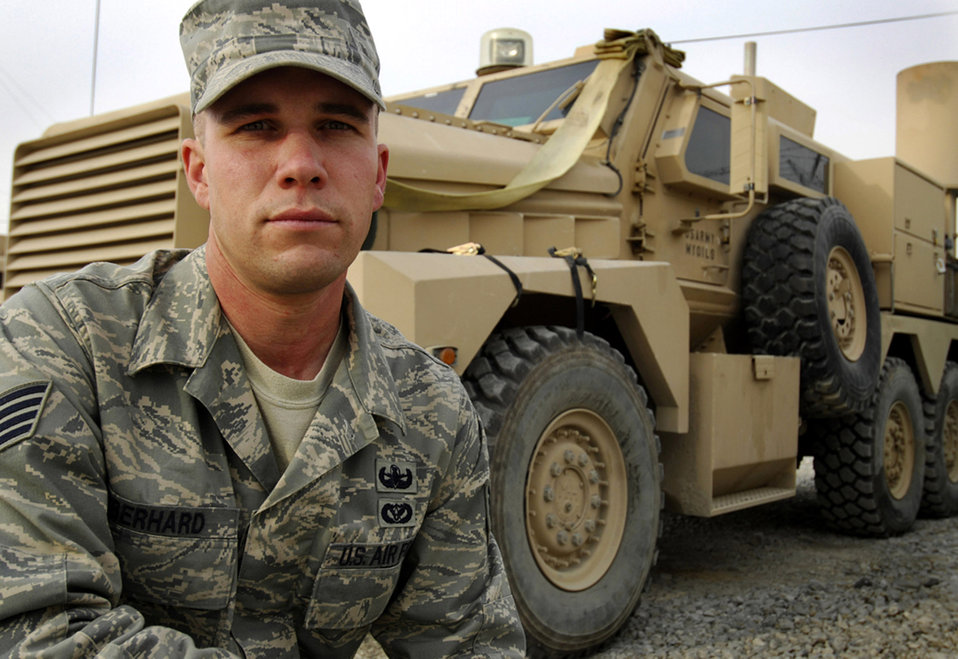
A life saved ... unexpectedly

Staff Sgt. Eric Eberhard kneels in front of a joint explosive ordnance disposal rapid response vehicle Dec. 17 at Forward Operating Base Gardez, Afghanistan. Sergeant Eberhard's quick reactions allowed him to save the life of the leader of his three-person EOD team after an improvised explosive device detonated near them Dec. 7. He is a Salt Lake City native deployed from the 419th Civil Engineer Squadron at Hill Air Force Base, Utah.